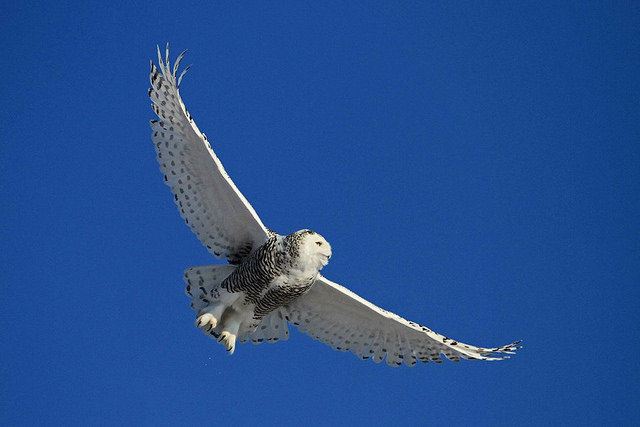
Snowy owl

Hamden Slough National Wildlife Refuge, MN - photo by Lee Kensinger